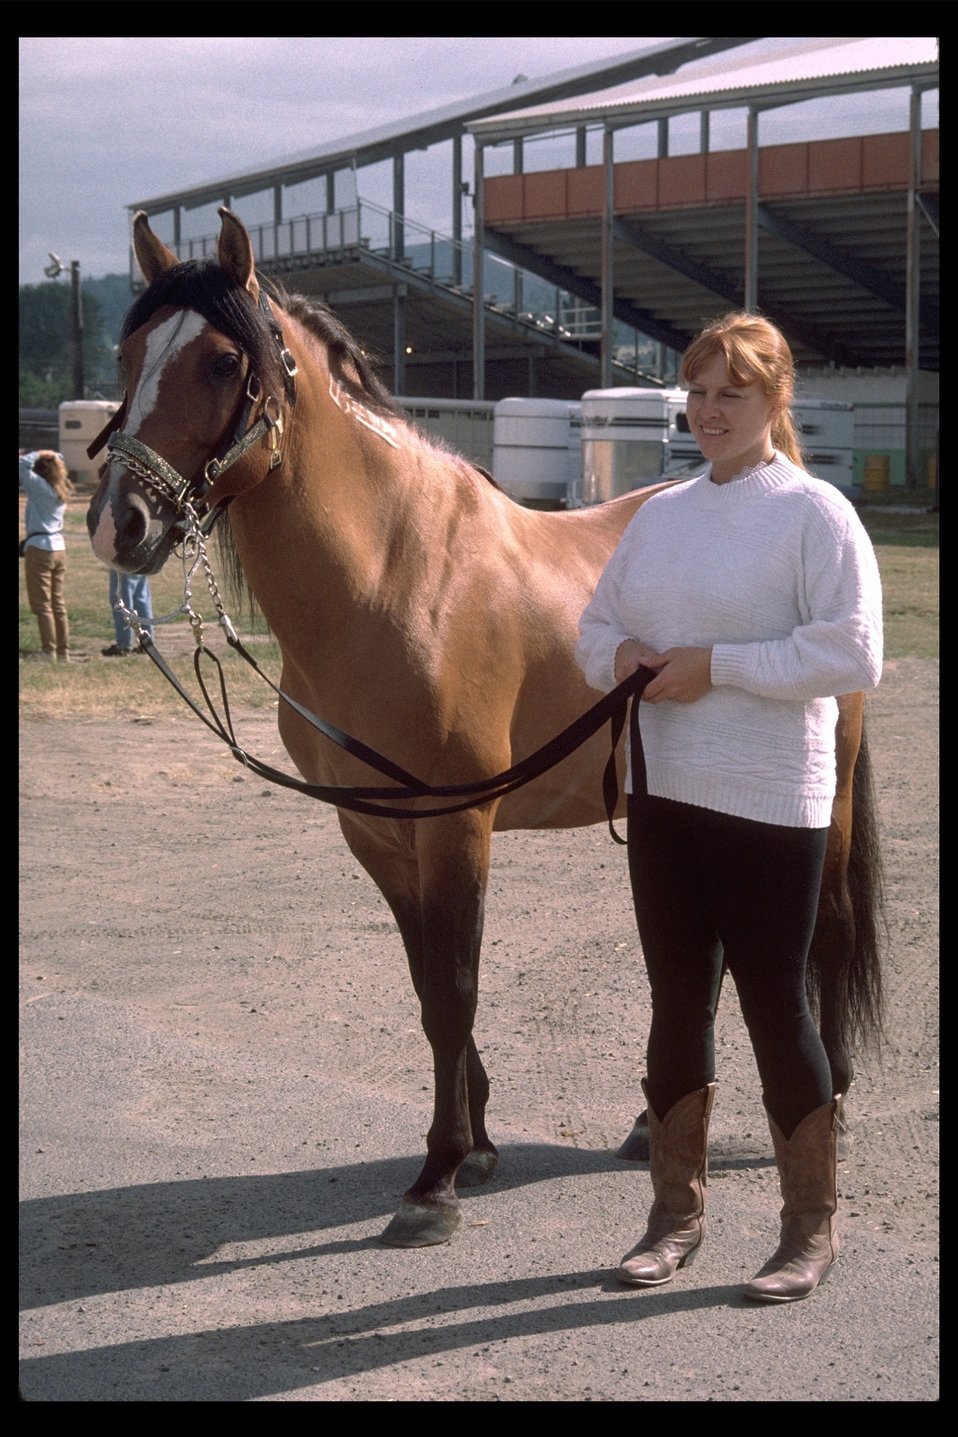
Proud adopter with Kiger Mustang at Riddle Mountain Wild Bear adoption show at Longview, WA.